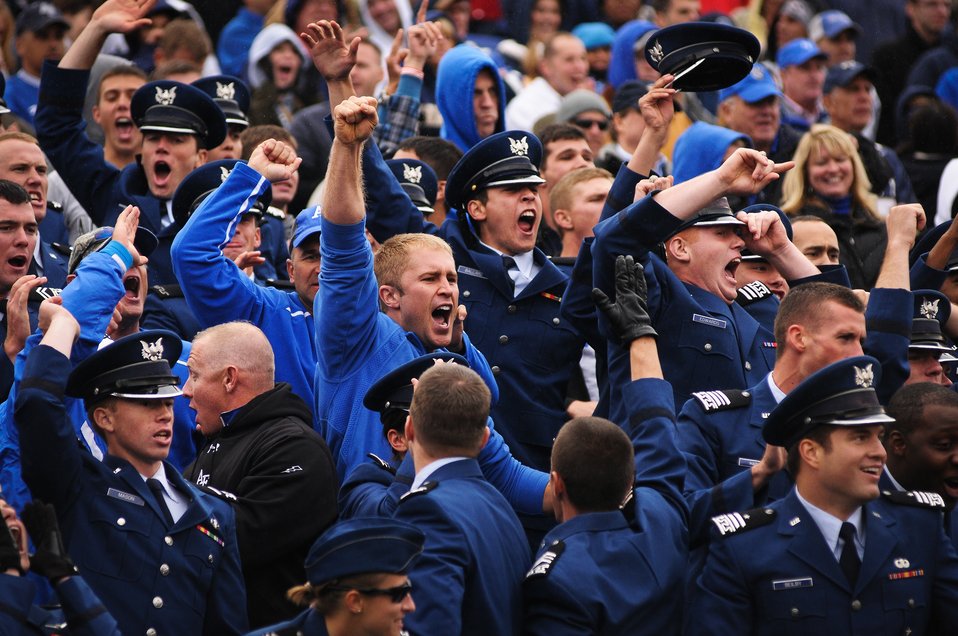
Team spirit

Fans of the U.S. Air Force Academy football team celebrate the game winning score against the Naval Academy Oct. 1, 2011, at Jack Stephens Field, Annapolis, Md. The Falcons won the game 35-34 in overtime.